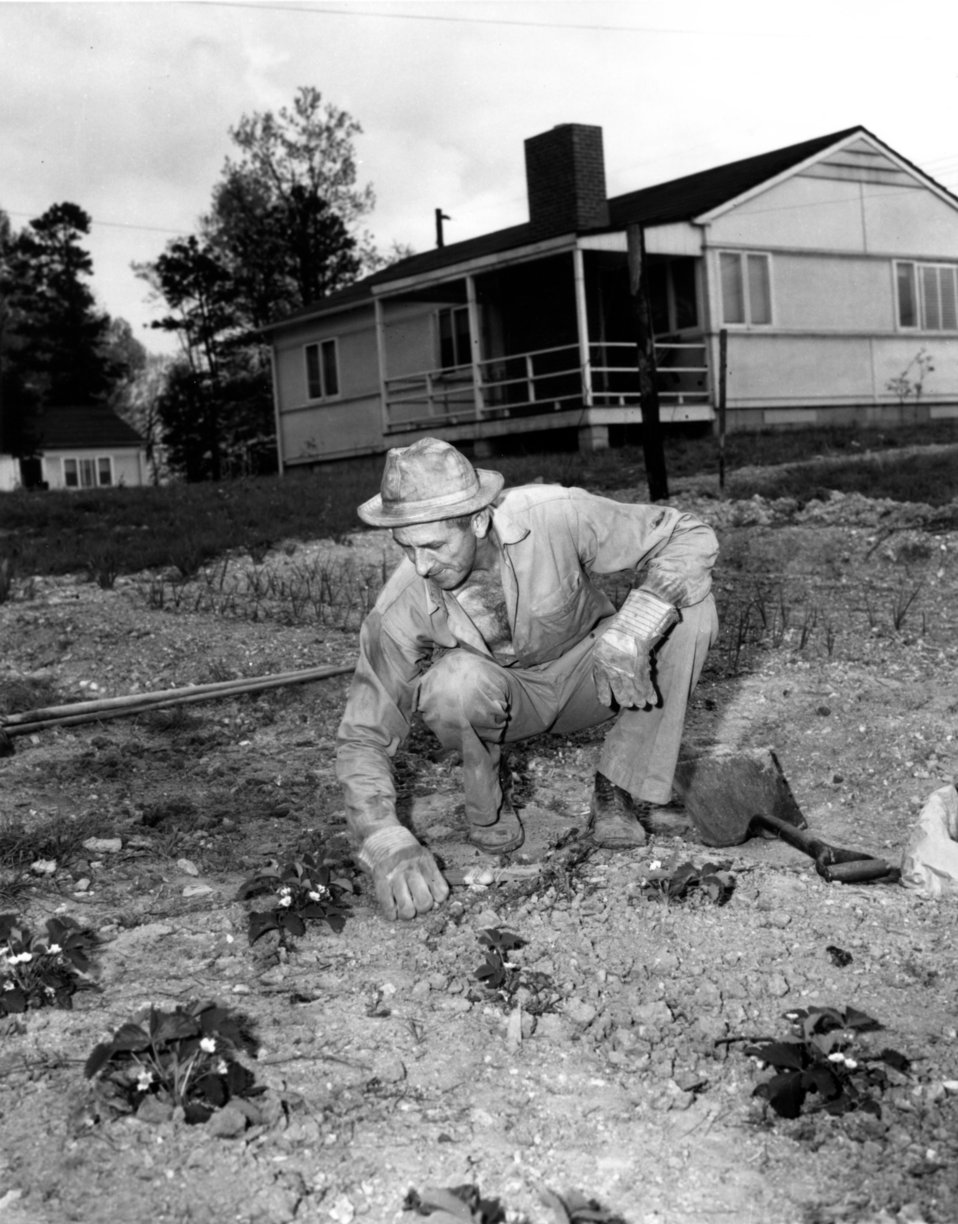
Daily Life at Oak Ridge